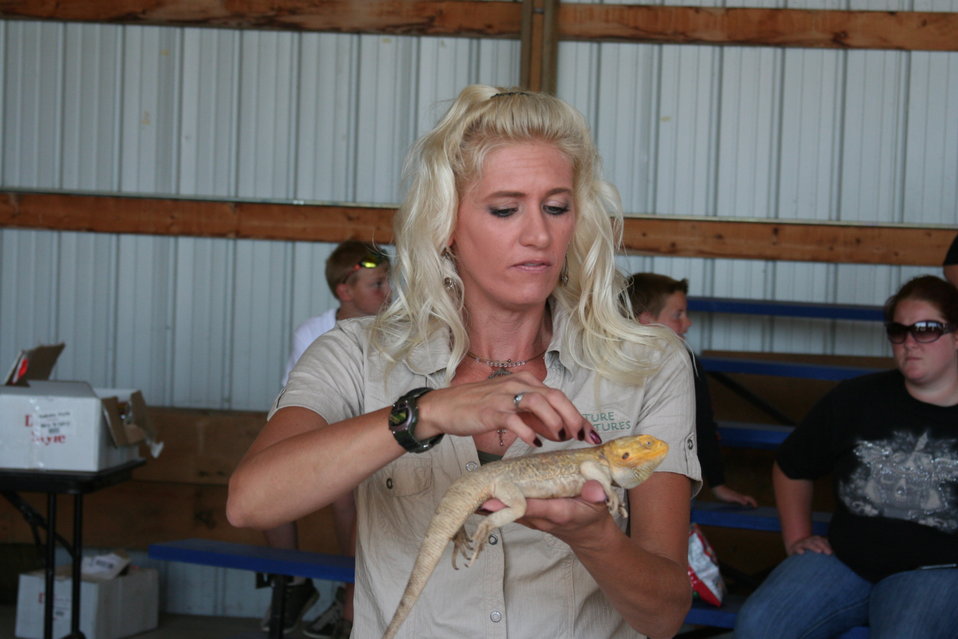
2011 Huron Prairie Fest